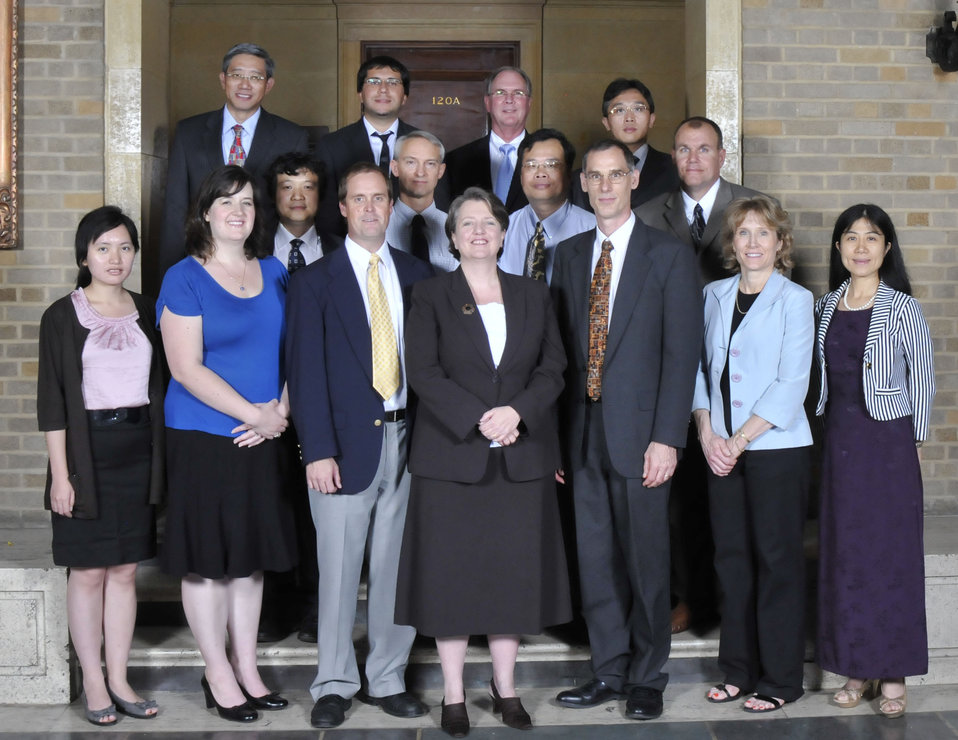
CropScape-Cropland Data Layer Team
National Agricultural Statistics Service, Fairfax, VA
Jeffrey Todd Bailey, Group Leader
For completing a conterminous National Cropland Data Layer product and CropScape, a web dissemination tool for exploring, visualizing, and querying of United States cropland for use in research, conservation, climate change, and water
resource.
On September 14, 2011 in the patio of the Whitten Building Patio of the US Department of Agriculture in Washington, DC.